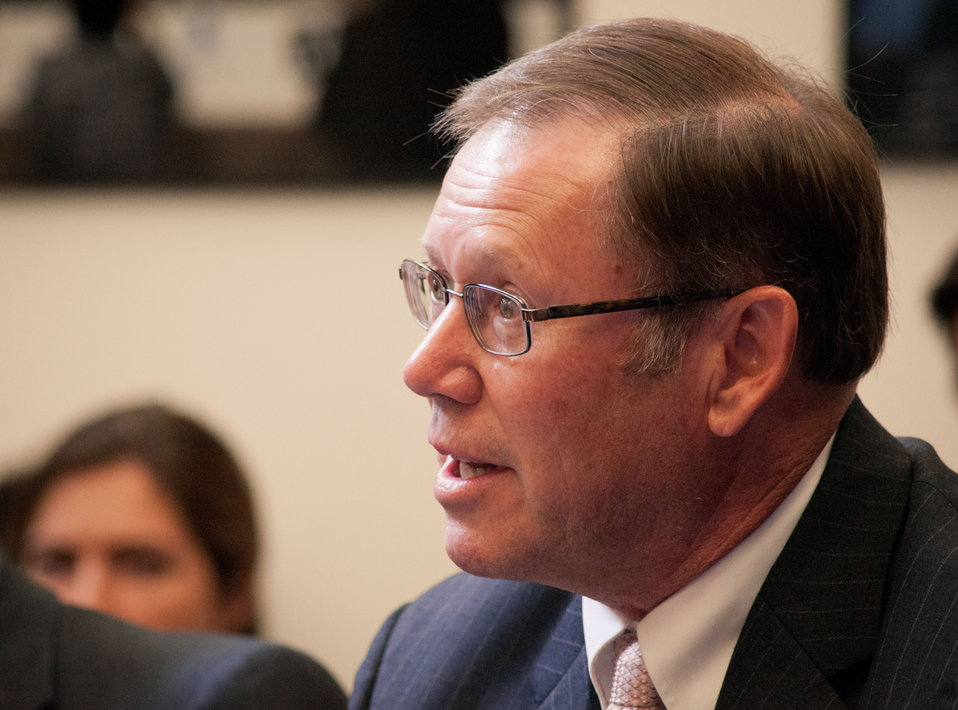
Everett Dobrinski, CoBANK, North Dakota, attended a meeting at the White House, in Washington, DC, on July 6, 2011. He was asked to participate along with President Barack Obama, Agriculture Secretary Tom Vilsack, the President's Domestic Policy Adviser Melody Barnes and rural communities leaders from across the country for the White House Rural Champions of Change event to strengthen rural communities and promote economic growth. Farming all his life in ND, taught high school while farming for a few years, full-time farmer now. He is a leader in co-operatives with farming. Now is a board chairman of CoBank that is a farm credit bank, which lends to rural electric, water, and telephone. Also lends to farm credit associations. Most co-ops only lend to farm credit associations but CoBank also does direct loans. Lends through USDA, especially to start-up coops, like ethanol. He also serves on rural electric co-operative board.